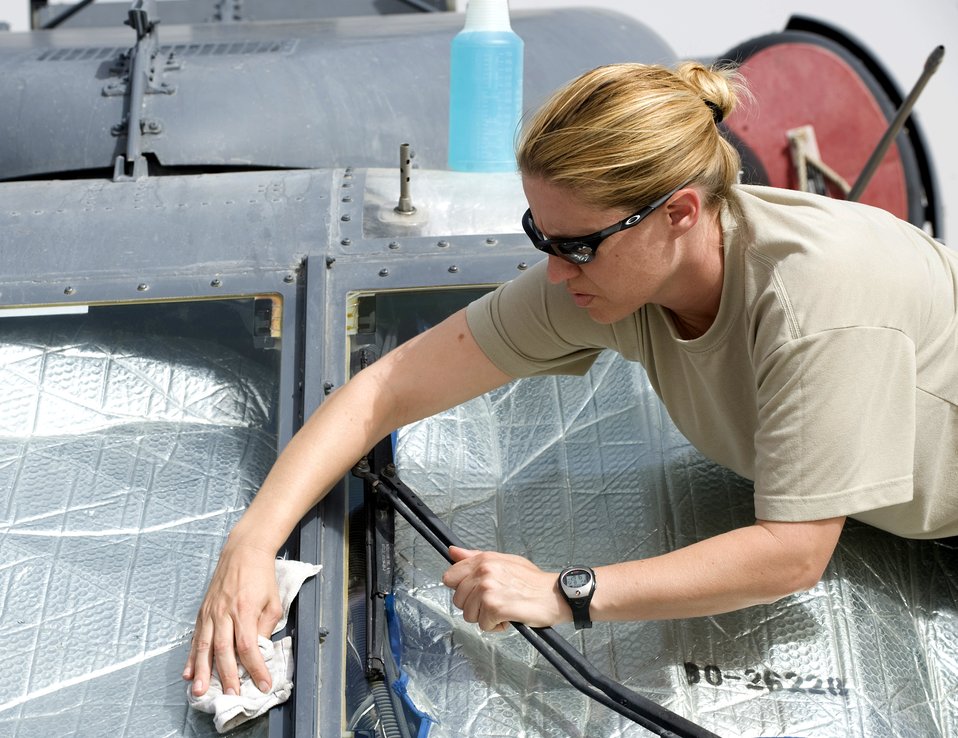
Airmen enhance Army medical evacuation mission

Tech. Sgt. Tricia Broenneka cleans windows on an HH-60 Pave Hawk before a flight Aug. 15 at Kandahar Air Base, Afghanistan. The HH-60 and crews who fly and maintain them are assigned to the 305th Expeditionary Rescue Squadron from Davis-Monthan Air Force Base, Ariz.